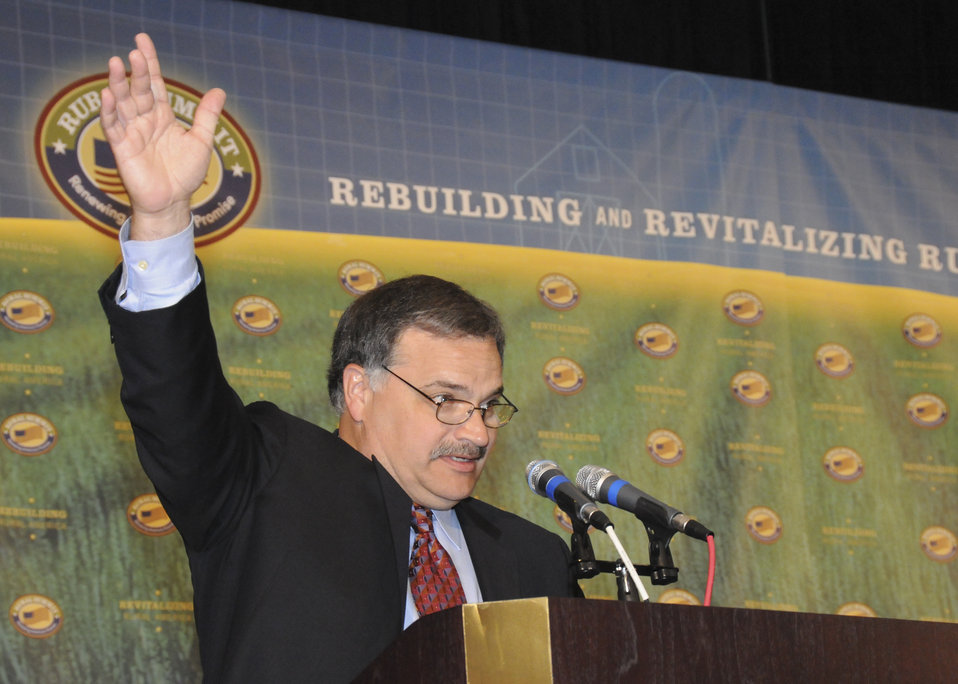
Agriculture Broadcaster at WGN Radio Max Armstrong makes remarks at the National Rural Summit held at Jefferson College in Hillsboro, MO, on Thursday, June 3, 2010. USDA Photo 10di1386-22.